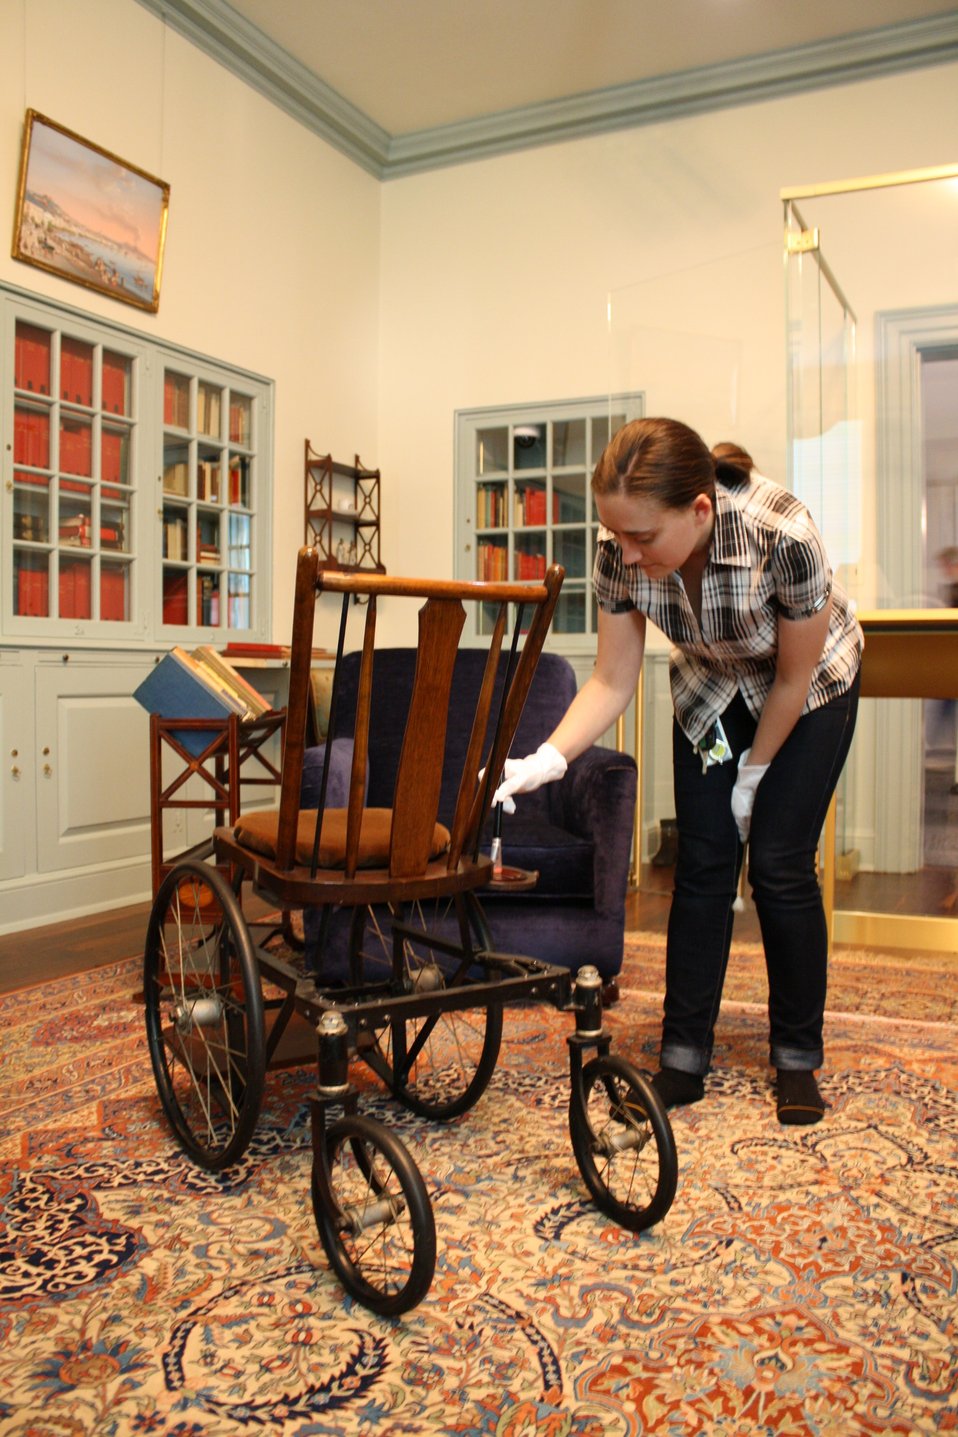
Katherine Sardino dusts FDR's wheelchair in the President's Library study.; Location: Franklin D. Roosevelt Presidential Library, Hyde Park, New York